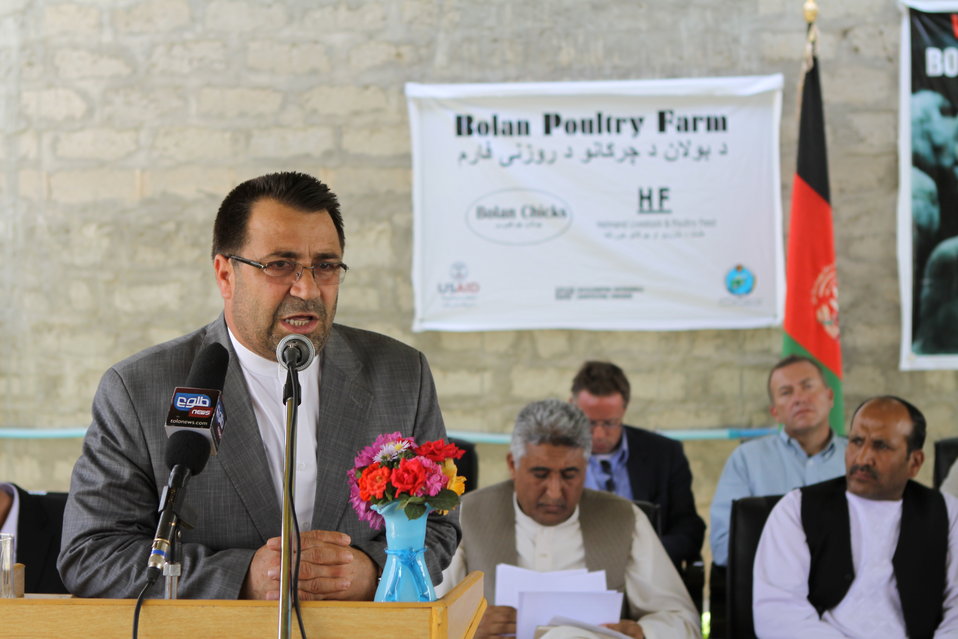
Bolan Poultry Farm